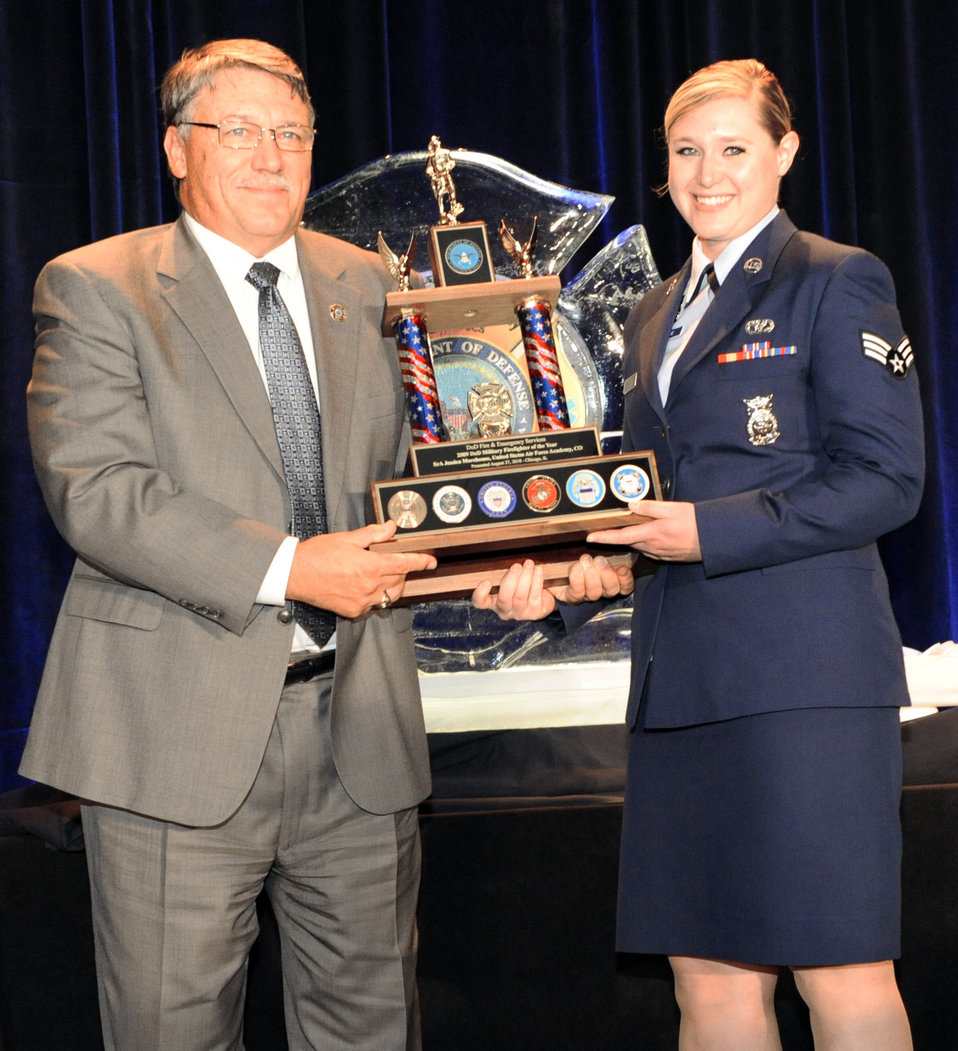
Air Force firefighters honored by DOD officials

Senior Airman Jessica Morehouse was named the 2010 Department of Defense Military Firefighter of the Year. Airman Morehouse is assigned to from the U.S. Air Force Academy Fire Department, Colo.